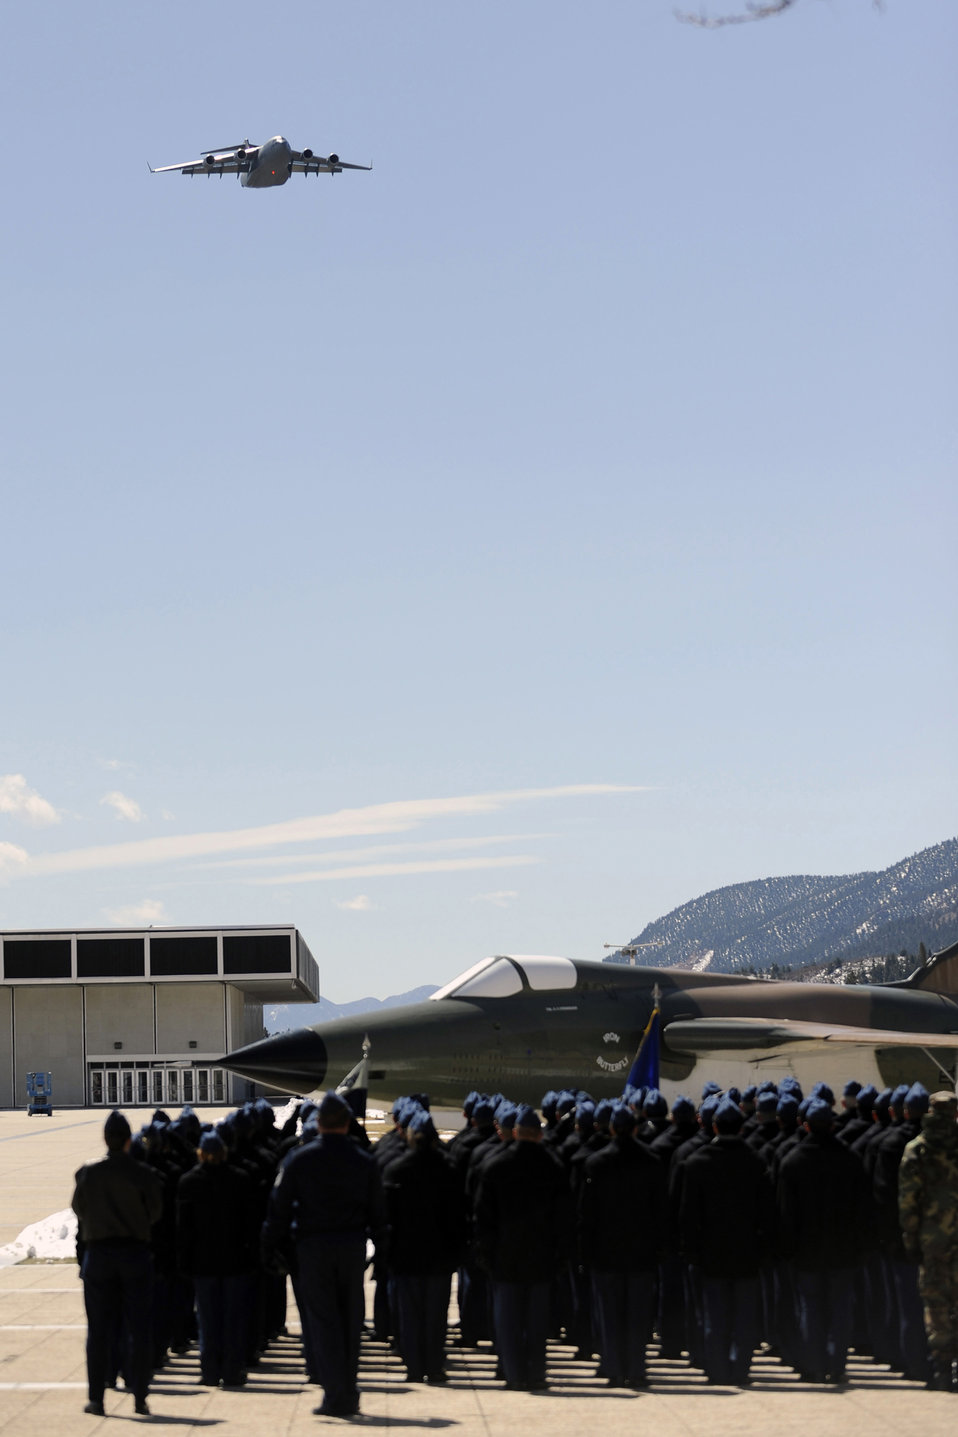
US Air Force Academy, CO

A C-17 flown by Commandant of Cadets Brig. Gen. Samuel Cox, Class of 1984 and Maj. Dan Rohlinger, Class of 1997, flies over the U.S. Air Force Academy terrazzo during the noon-meal formation Mar 31. Leading cadet squadron 28 is Cadet 1st Class Andrew Groberg.